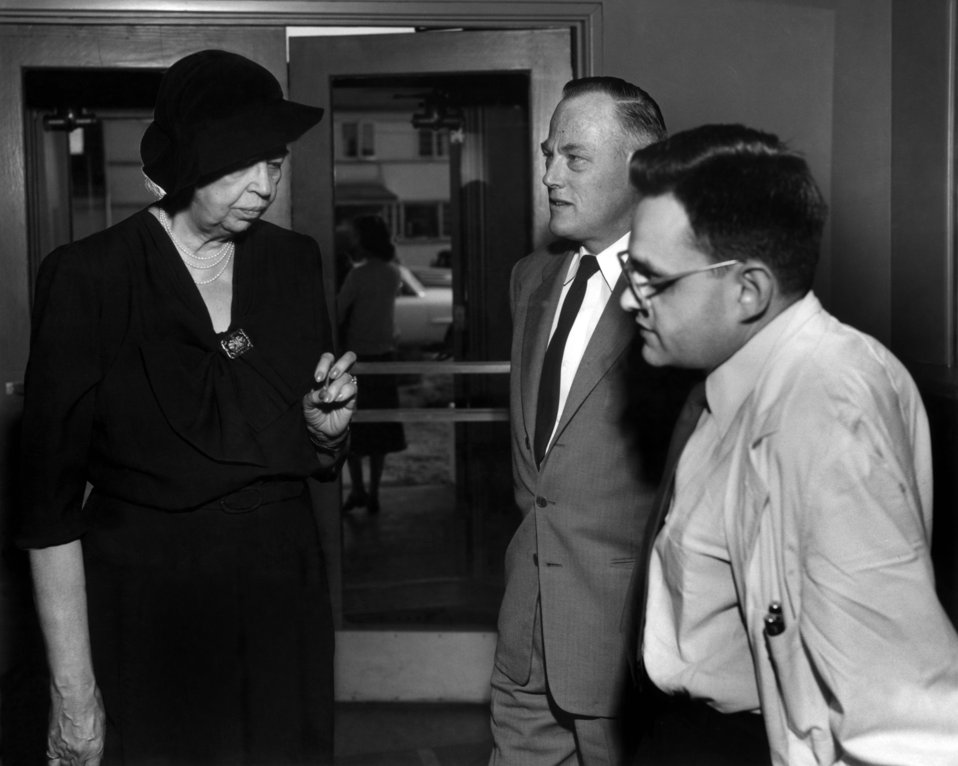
Elenore Roosevelt visit at Oak Ridge

55-0106a DOE photo by Ed Westcott

Elenore Roosevelt visit at Oak Ridge Institute of Nuclear Studies with Dr. William Pollard Oak Ridge Tennessee 2-18-1955